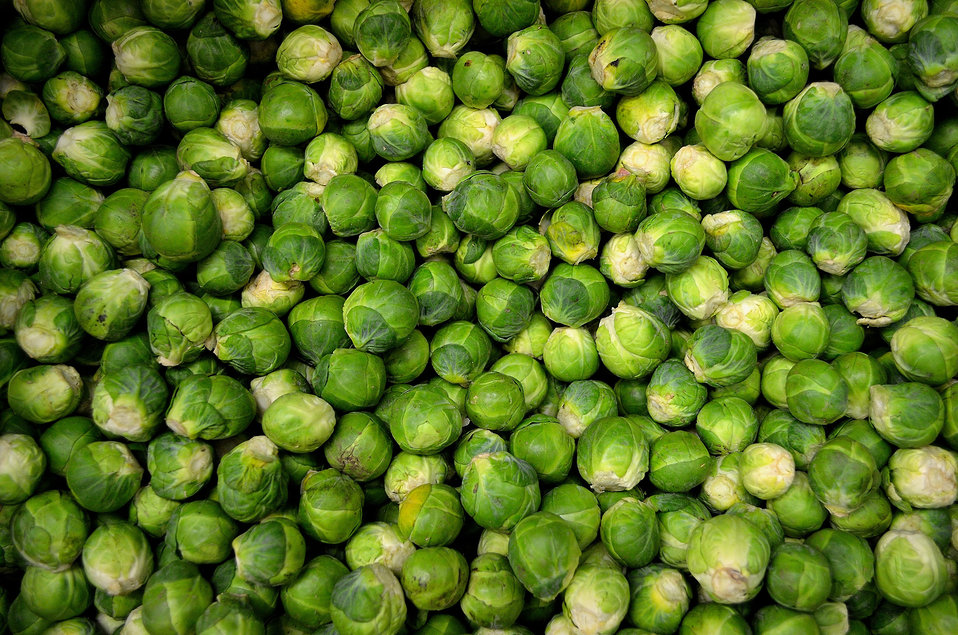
Small sprouts.